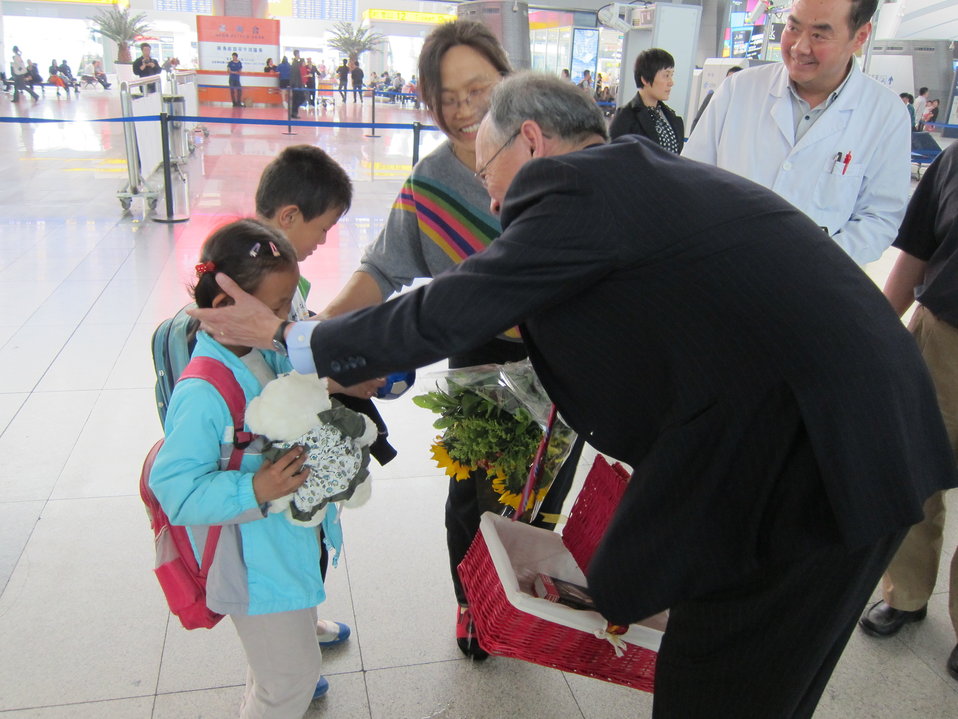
Chen Guangcheng with his wife and children at a hospital in Beijing, China, on May 1, 2012.